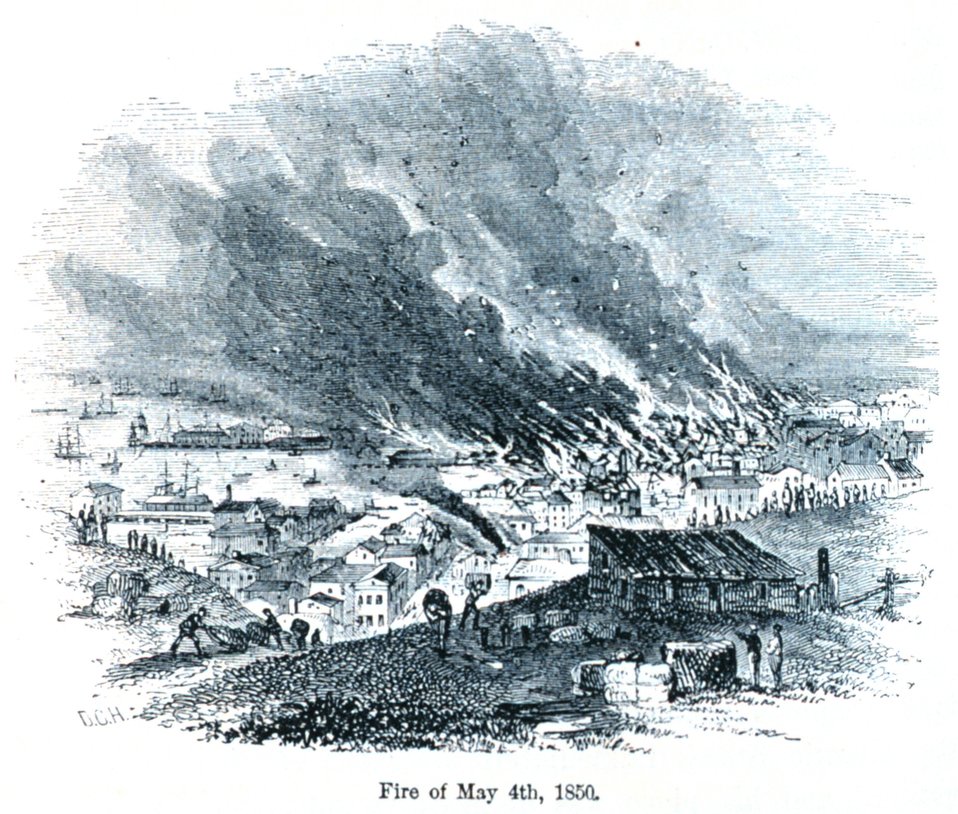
The San Francisco fire of May 4th, 1850. In: 'The Annals of San Francisco'. Frank Soule, John Gihon, and James Nesbit. 1855. Page 274. D. Appleton & Company, New York. F869.S3.S7 1855.